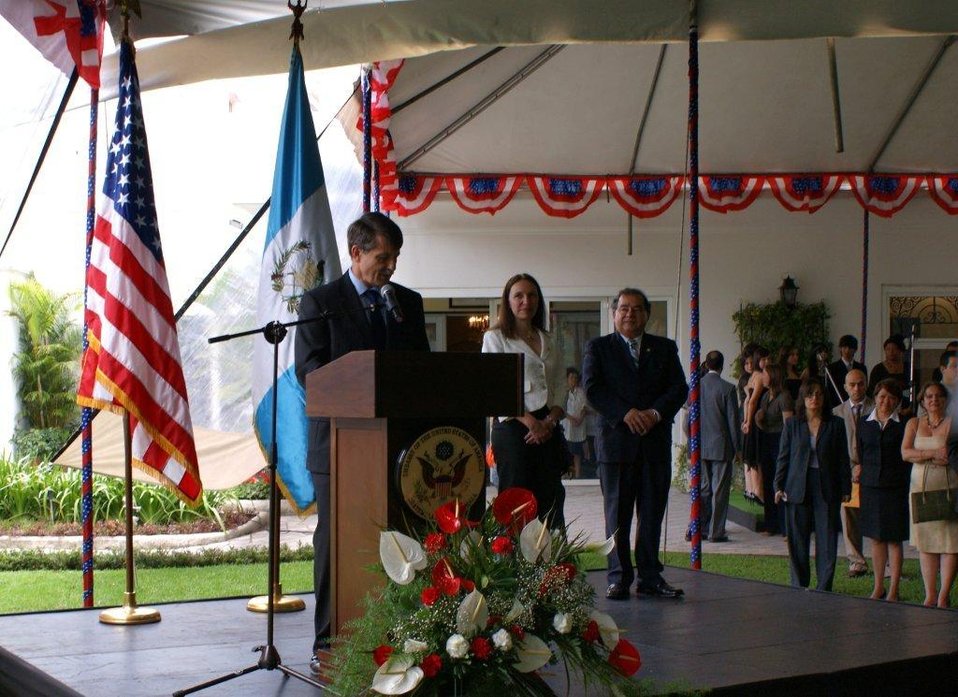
July 4th Celebration at U.S. Embassy in Guatemala

U.S. Ambassador to Guatemala Stephen McFarland, accompanied on stage by Mrs. McFarland and Guatemalan Deputy Foreign Minister Ibarra, delivers remarks during the U.S. Independence Day celebration at the Ambassador's Residence in Guatemala City, Guatemala, on July 2, 2010.